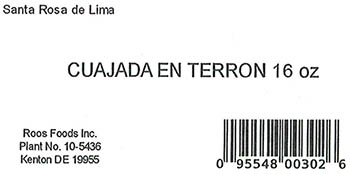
RECALLED – Variety of cheeses

February 23, 2014 – Product Recall – Roos Foods Voluntarily Recalls Variety of Cheeses (listed below) Due to Possible Health Risk.